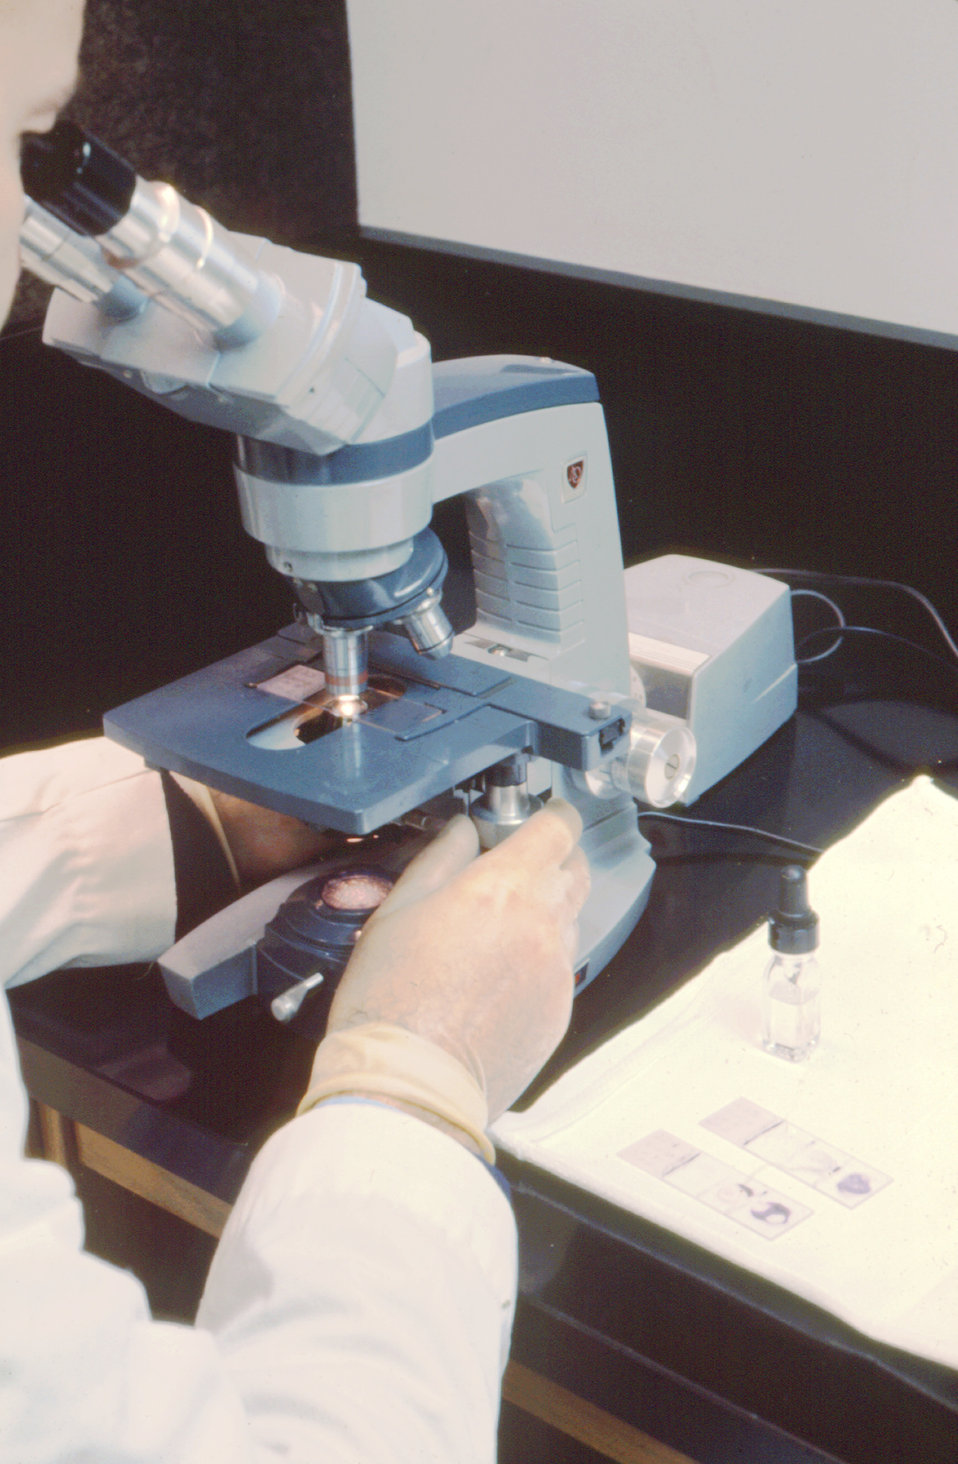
This lab researcher is checking for the presence of C. botulinum during the microscopic examination of a food suspension.